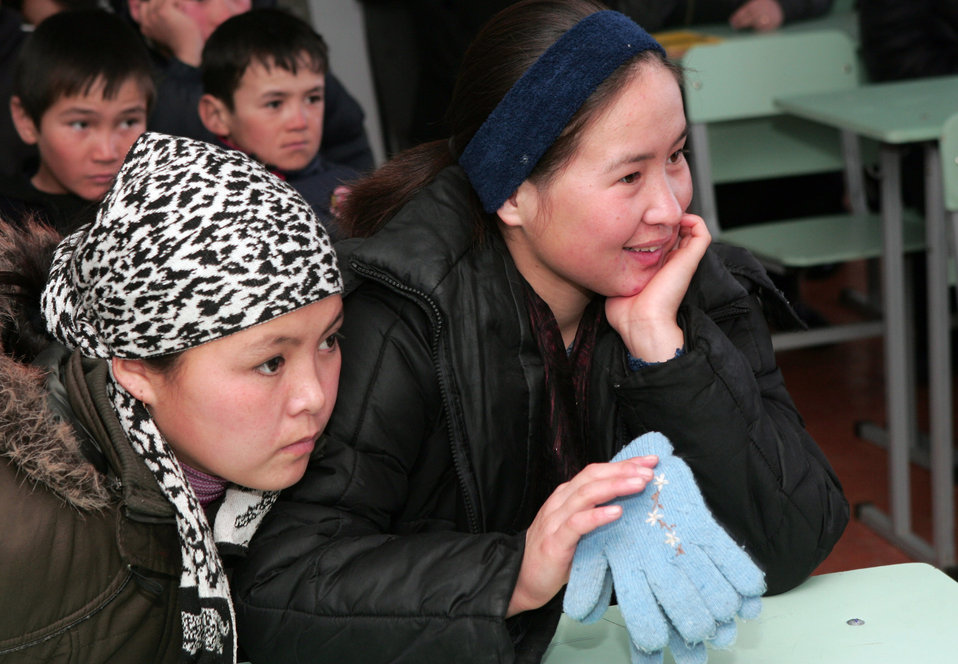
Shuttle Endeavour crew visits Kyrgyzstan village school

Children from the Jany-Pakhta village school listen intently to the astronauts from the Space Shuttle Endeavour STS-126 mission visiting a Kyrgyzstan village school Jan. 29 near Manas Air Base, Kyrgyzstan. The six crewmembers of the space shuttle spoke of the journey, which launched from Kennedy Space Center in Florida Nov. 14 and returned Nov. 30, 2008.